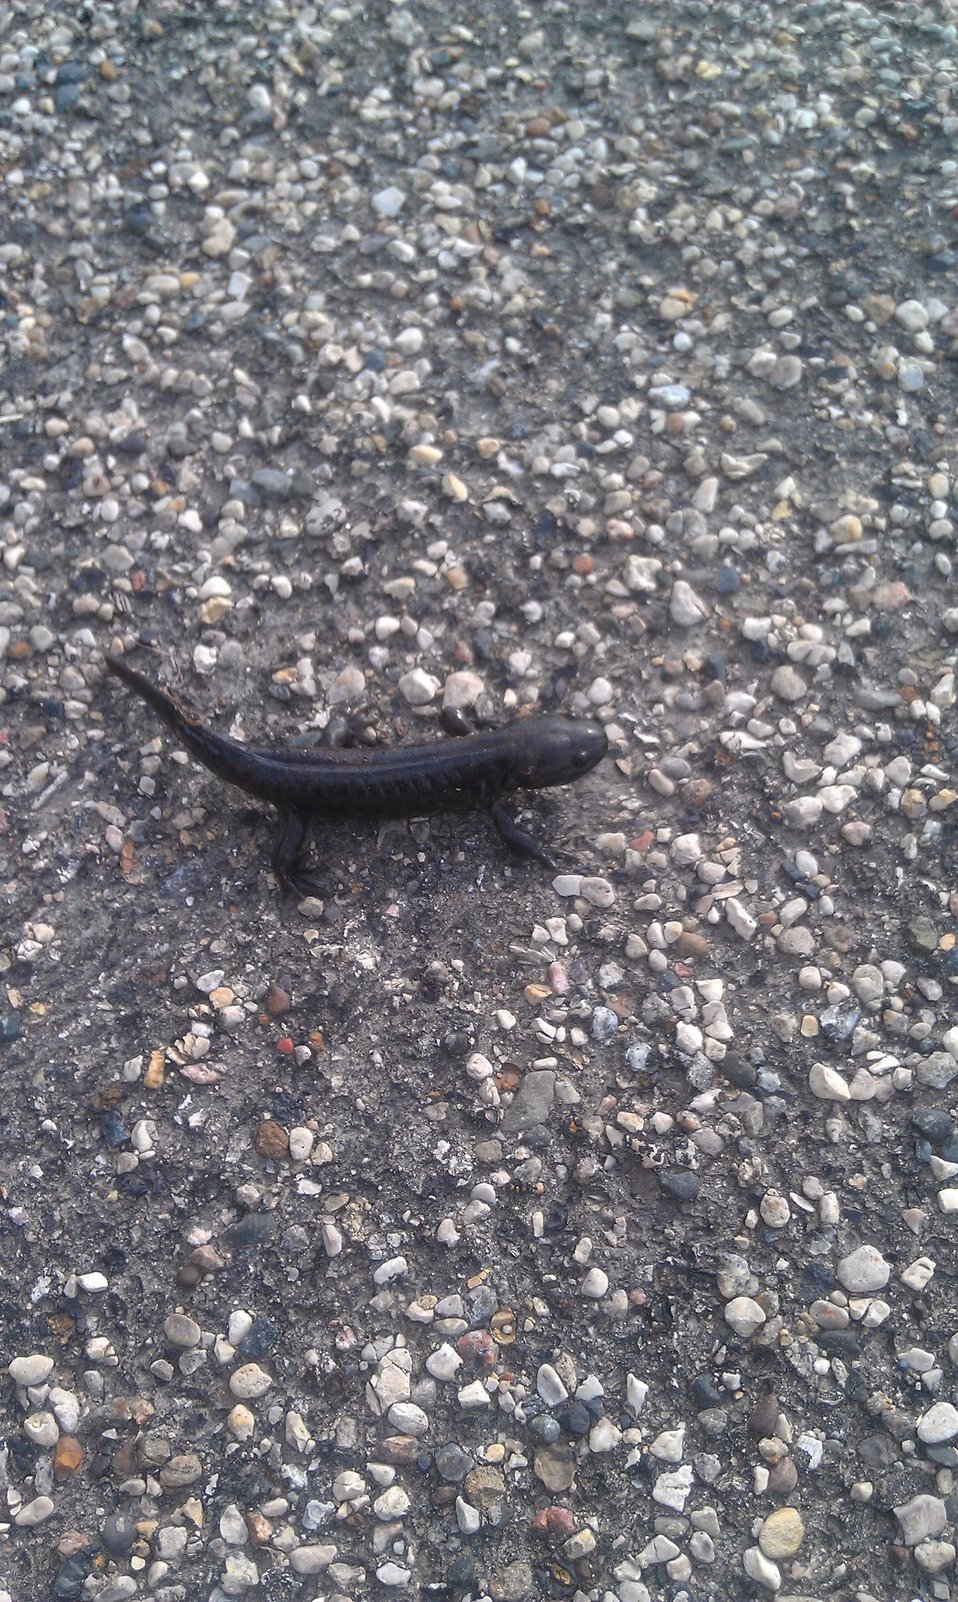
WPA Wildlife

Salamander